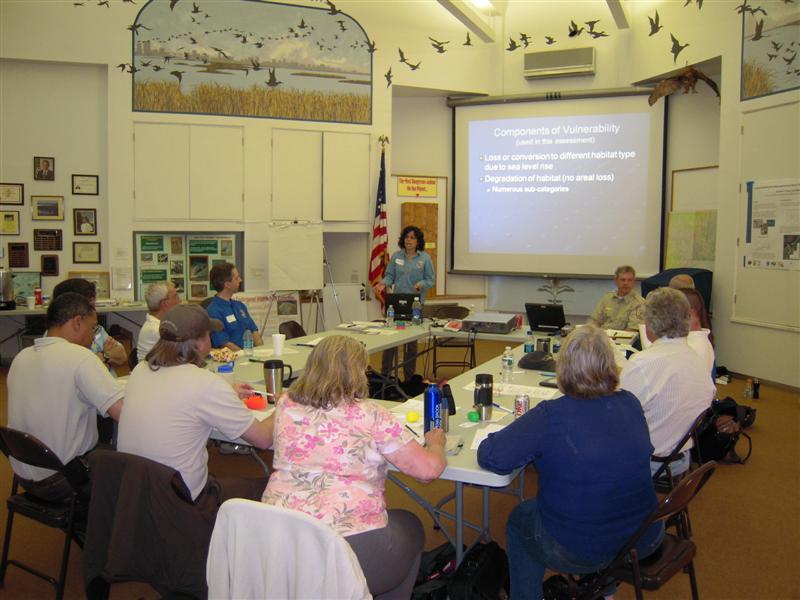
Vulnerability Assessment

Dorie Stolley moderates the Vulnerability Assessment.